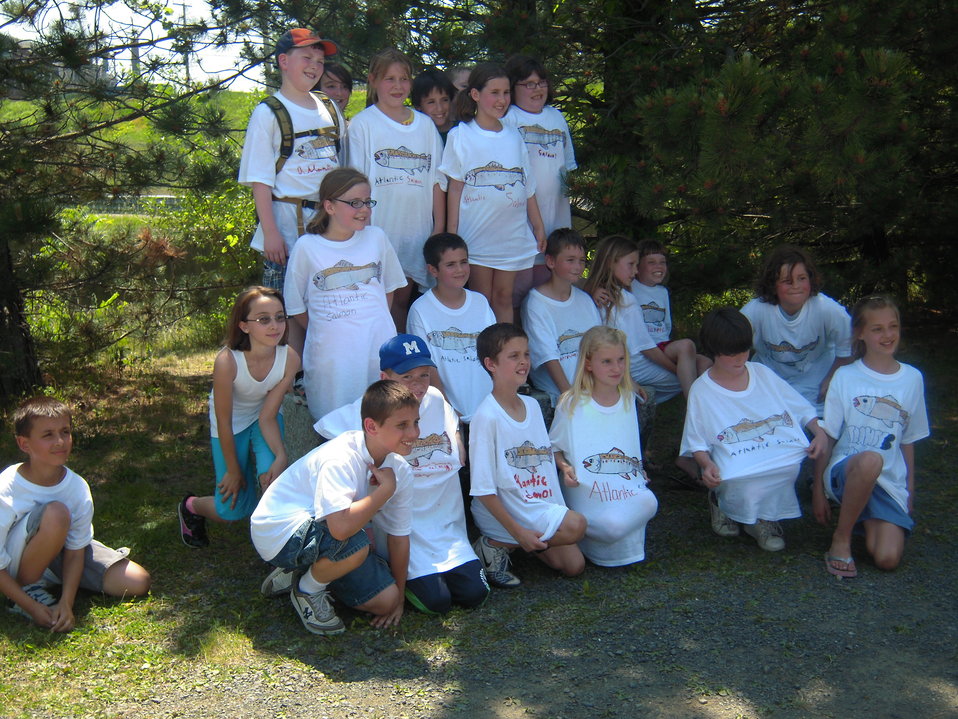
Students pose for picture with t-shirts